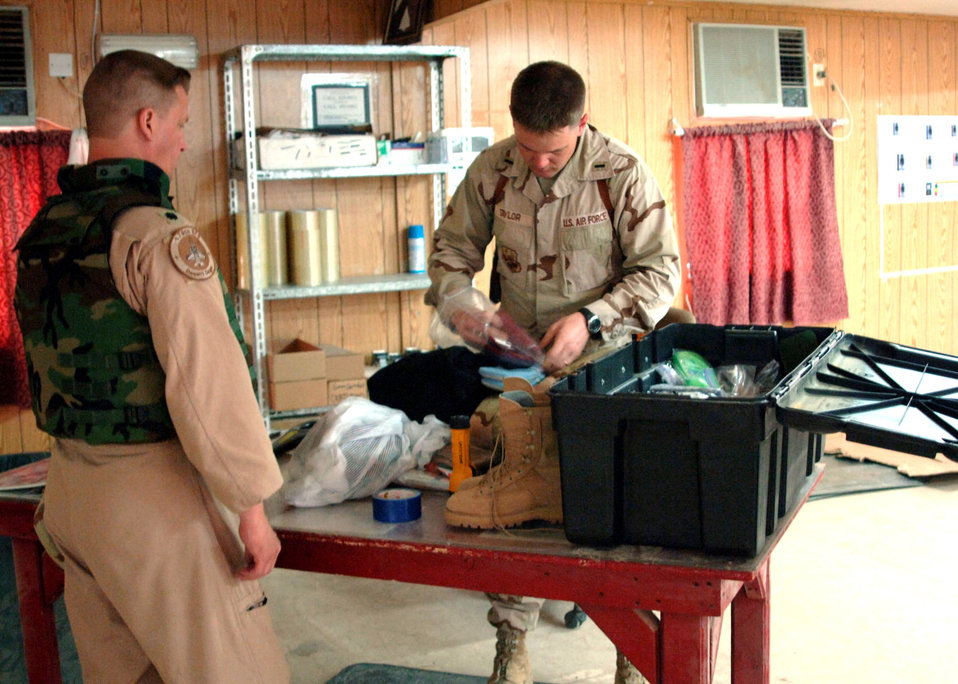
Airmen provide 1st class postal service to thousands

'Combat Postal' officer in charge 1st Lt. Lewis Taylor, 732nd Expeditionary Support Squadron, completes a mail inspection at one of the three post offices at Balad Air Base, Iraq. The lieutenant is in charge of 43 in-lieu-of Airmen responsible for more than 325,000 pounds of incoming and 85,000 pounds of outgoing mail each week, who serve an average of 1,800 customers. Every day, two aircraft are used to deliver and pick up an average of 18 pallets of mail.